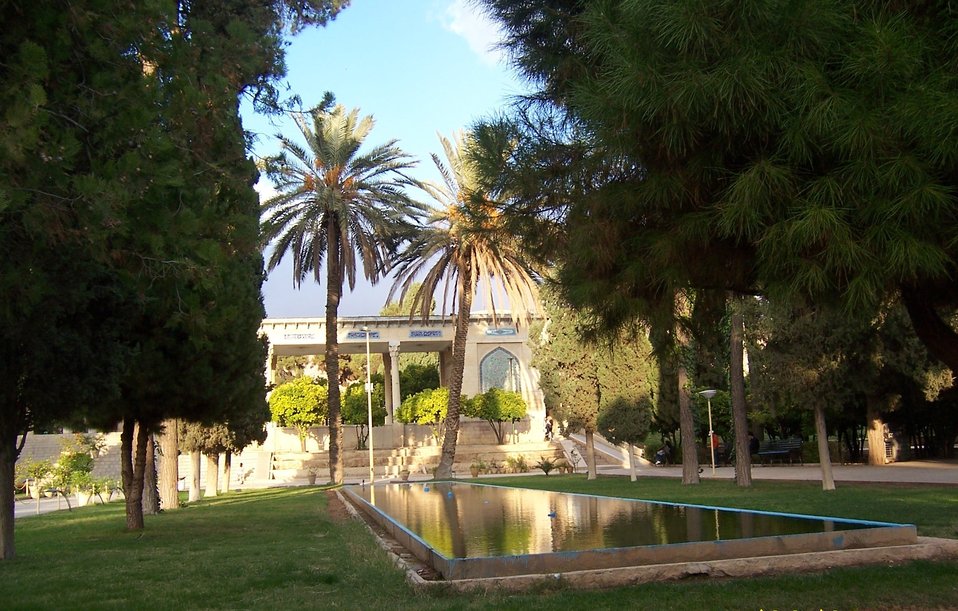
Tomb of Hafez